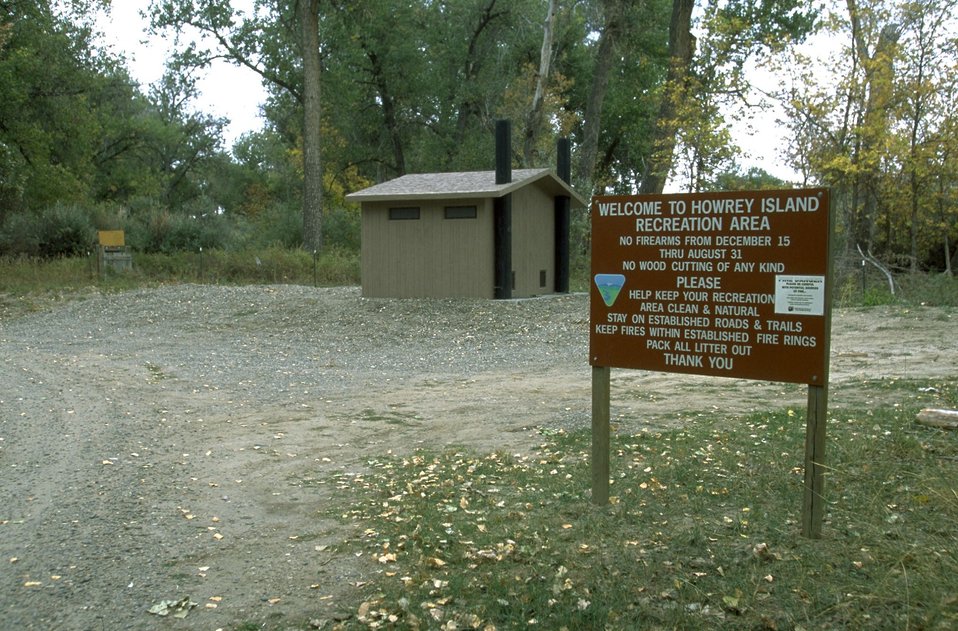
Entrance sign and restroom at the Howrey Island Recreation Area